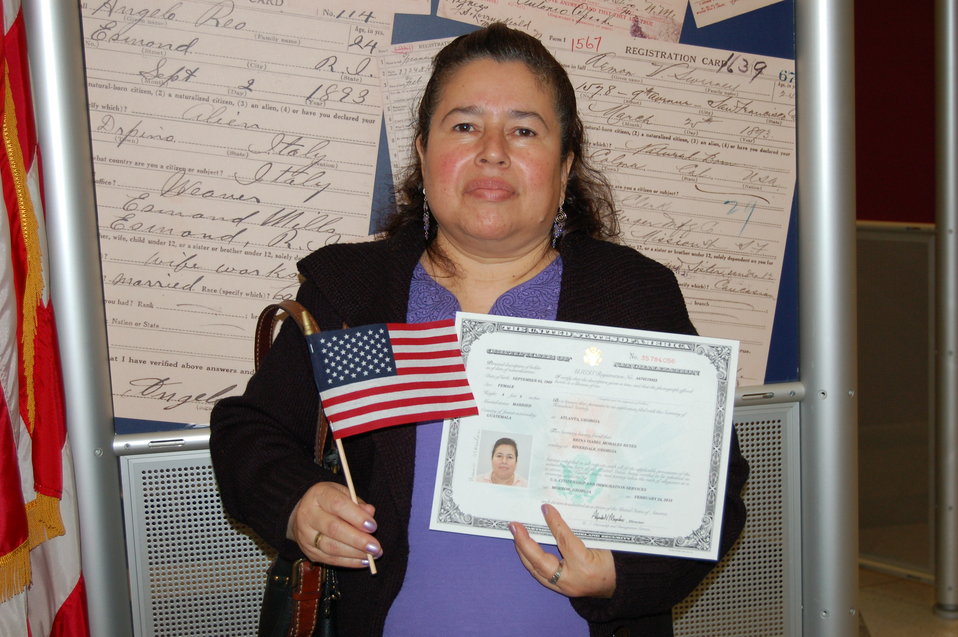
New Citizens